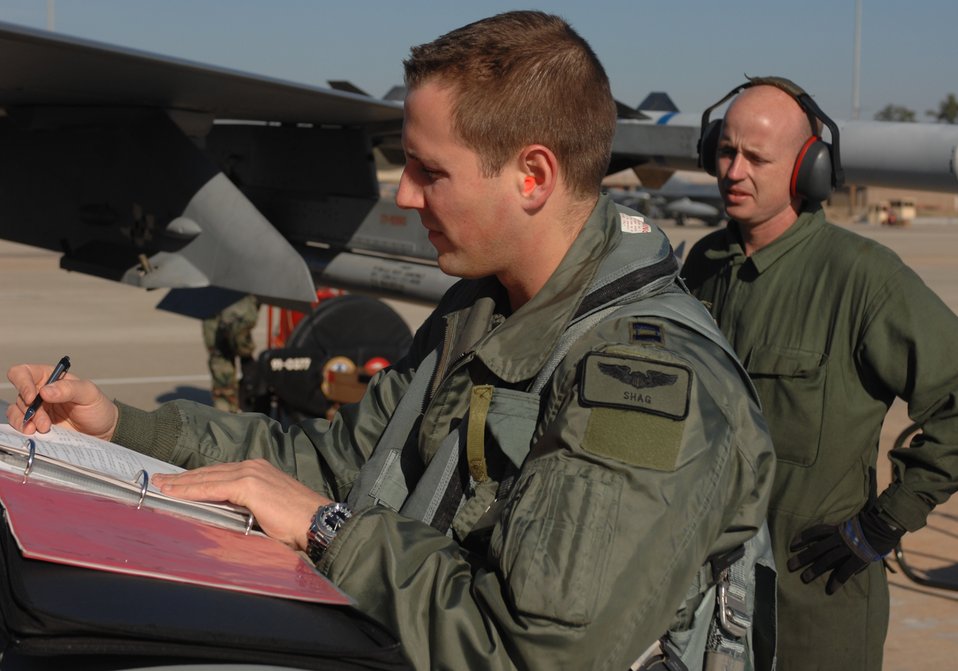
Iron Thunder roars through Shaw

Capt. Todd Adams and Staff Sgt. Donald Dunn prepare an F-16 Fighting Falcon for flight in support of Exercise Iron Thunder Feb. 7 at Shaw Air Force Base, S.C. The excercise helped prepare Airmen for airborne operations while deployed. The two are assigned to the 77th Fighter Squadron at Shaw AFB.